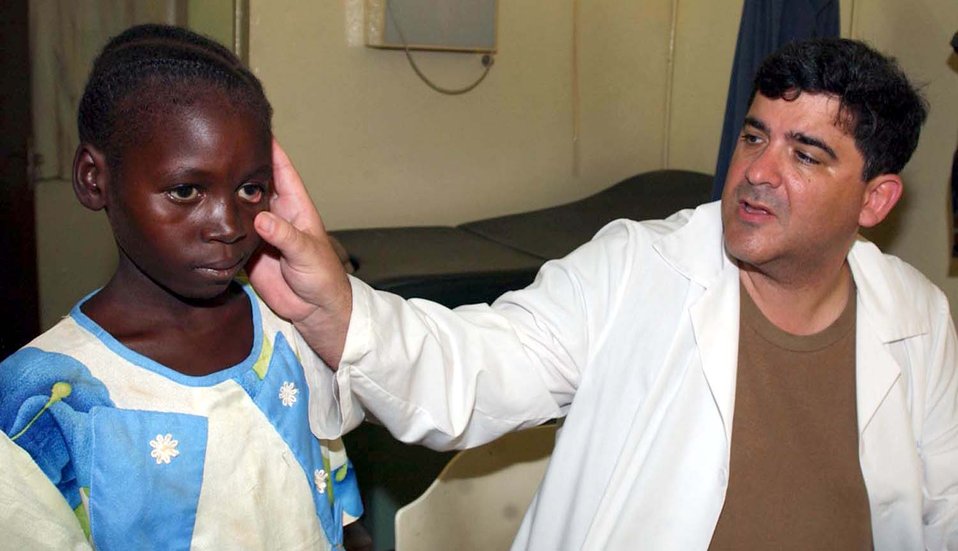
A helping hand

CAMP TONDIBIAH, Niger -- Col. (Dr.) Omar Eaton checks a Nigerian girl's eye during a medical exam here. Dr. Eaton is part of a 12-person Air Force Reserve Command medical team performing a humanitarian mission in Niger. The doctor is an individual mobilization augmentee assigned to Andrews Air Force Base, Md.